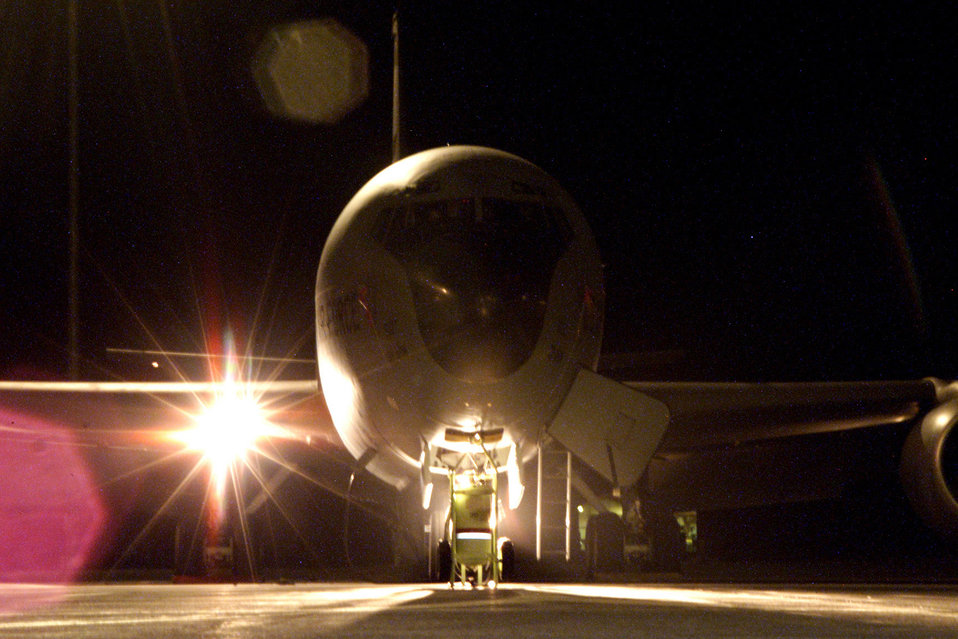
Light check

FAIRCHILD AIR FORCE BASE, Wash. -- A crew chief from the 92nd Air Refueling Wing conducts a preflight check on the landing lights of a KC-135 Stratotanker, in preparation for an operational readiness inspection.